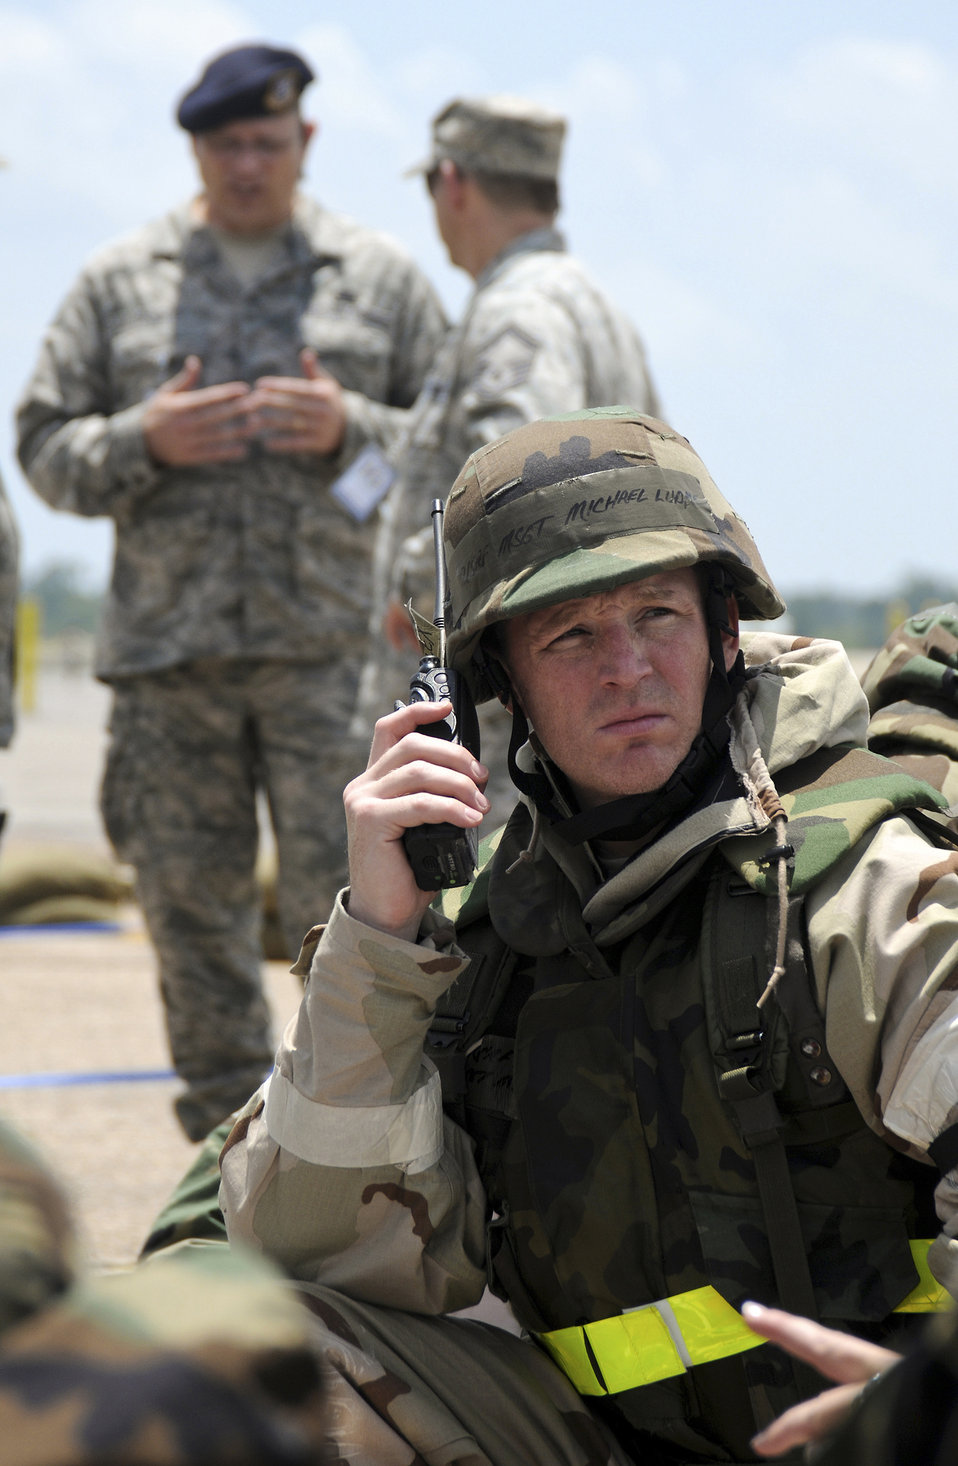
Homeland defense exercise

Master Sgt. Michael Ludke up-channels information during an evacuation of his building following a simulated attack during an operational readiness inspection May 20, 2010, at the Gulfport Combat Readiness Training Center in Gulfport, Miss. Sergeant Ludke is the nuclear, biological and chemical warfare cell chief from the 123rd Airlift Wing.